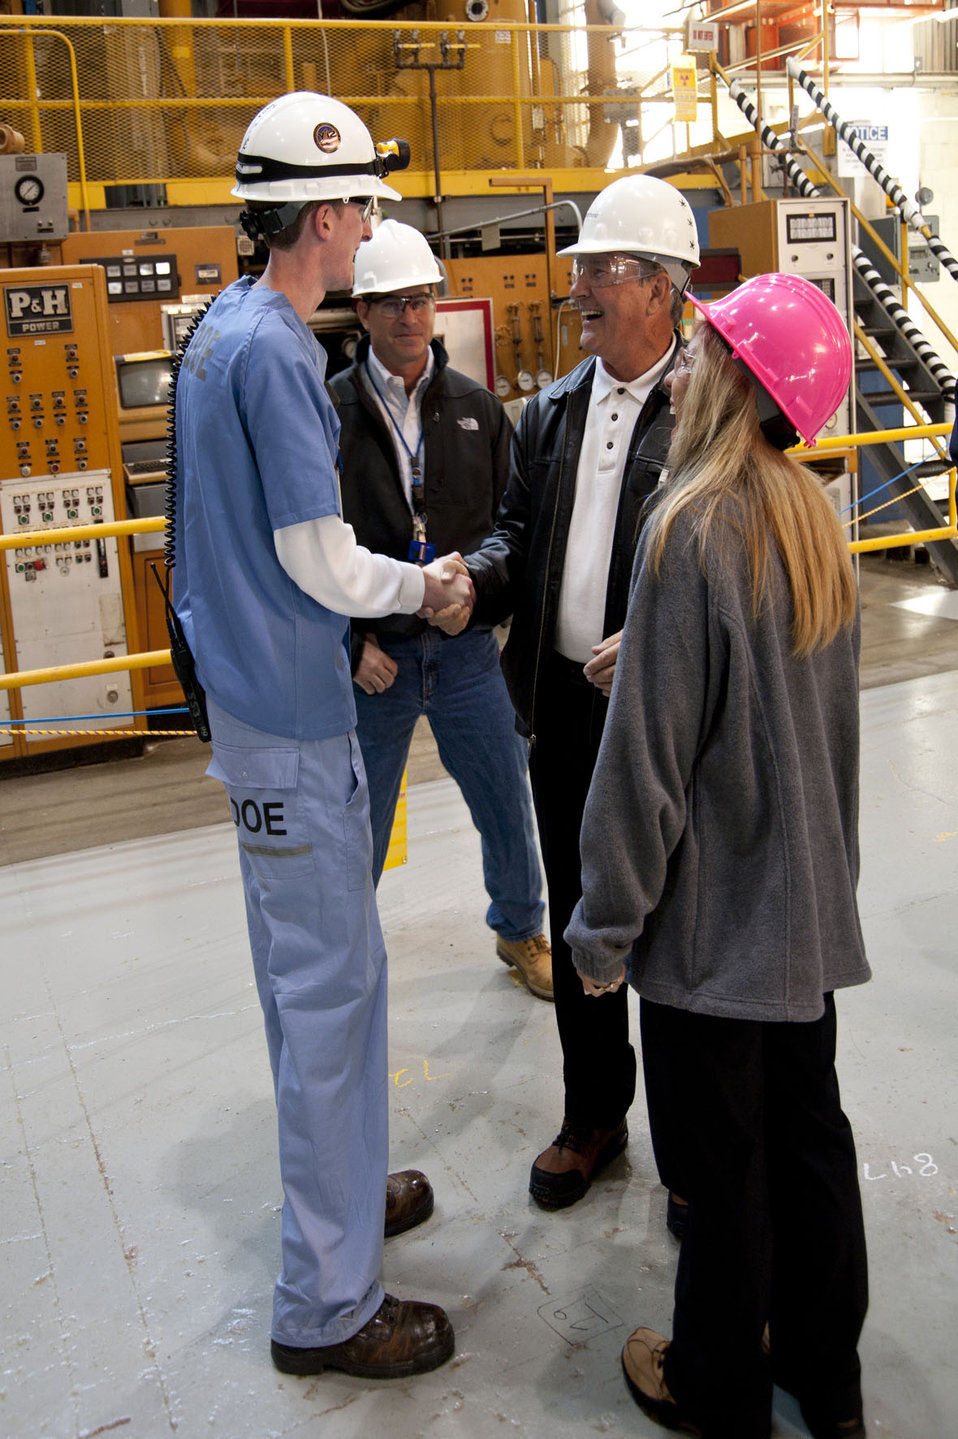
Skilled Workers Bruised by Recession Find New Start in Oak Ridge Recovery Act Work

Efforts to clean up waste from the Manhattan Project and the Cold War are under way at the Y-12 National Security Complex. The seven projects there funded by $216 million from the Recovery Act are providing work for more than 1,500 Americans, many of whom had struggled in the recent recession.

In addition to the work at Alpha 5 and Beta 4, Recovery Act projects at Y-12 include the West End Mercury Area storm sewer cleanup project, removal of soil contaminated with mercury, and the cleanup of a 7-acre scrap yard. In January 2011, Recovery Act workers completed the demolition of Building 9211 at Y-12, which reduced the footprint of the Cold War legacy by more than 83,000 square feet.